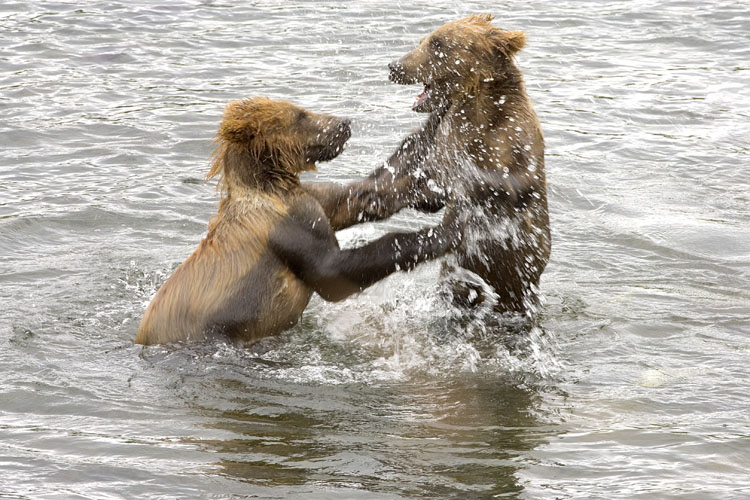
Kodiak Brown Bears

Playful Kodiak Bears